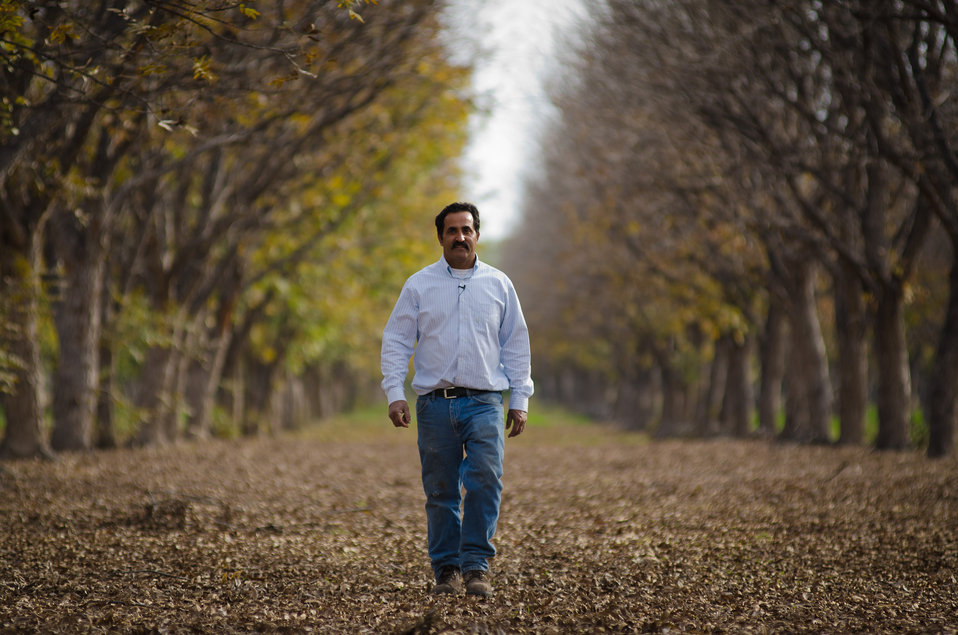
Arrowhead Farms of Crystal City, TX, on December 9, 2011, survived the exceptional drought and owner Mr. Akram Mohammad, can walk through the rows of 4,380 underground micro irrigated pecan trees on 146 of his 719 acre farm. Under his feet are nearly 25,000 feet of drip tubes, cutting in half the demand for water. During the growing season, the micro irrigated orchards are nearly a one-person operation. Mr. Mohammad said, “USDA (U.S. Department of Agriculture) was essential to my business and trees surviving the recent exceptional drought. The trees were stress free thanks to underground micro-irrigation. This is essential to the future growth of Texas agriculture and good for America.” U.S. Department of Agriculture’s (USDA) Environmental Quality Initiative Program (EQIP) awarded Mr. Mohammad a $130,000 grant in 2008. He provided $26,000 for the balance of the $156,000 total cost to install a 146-acre underground micro-irrigation for 4,380 trees.